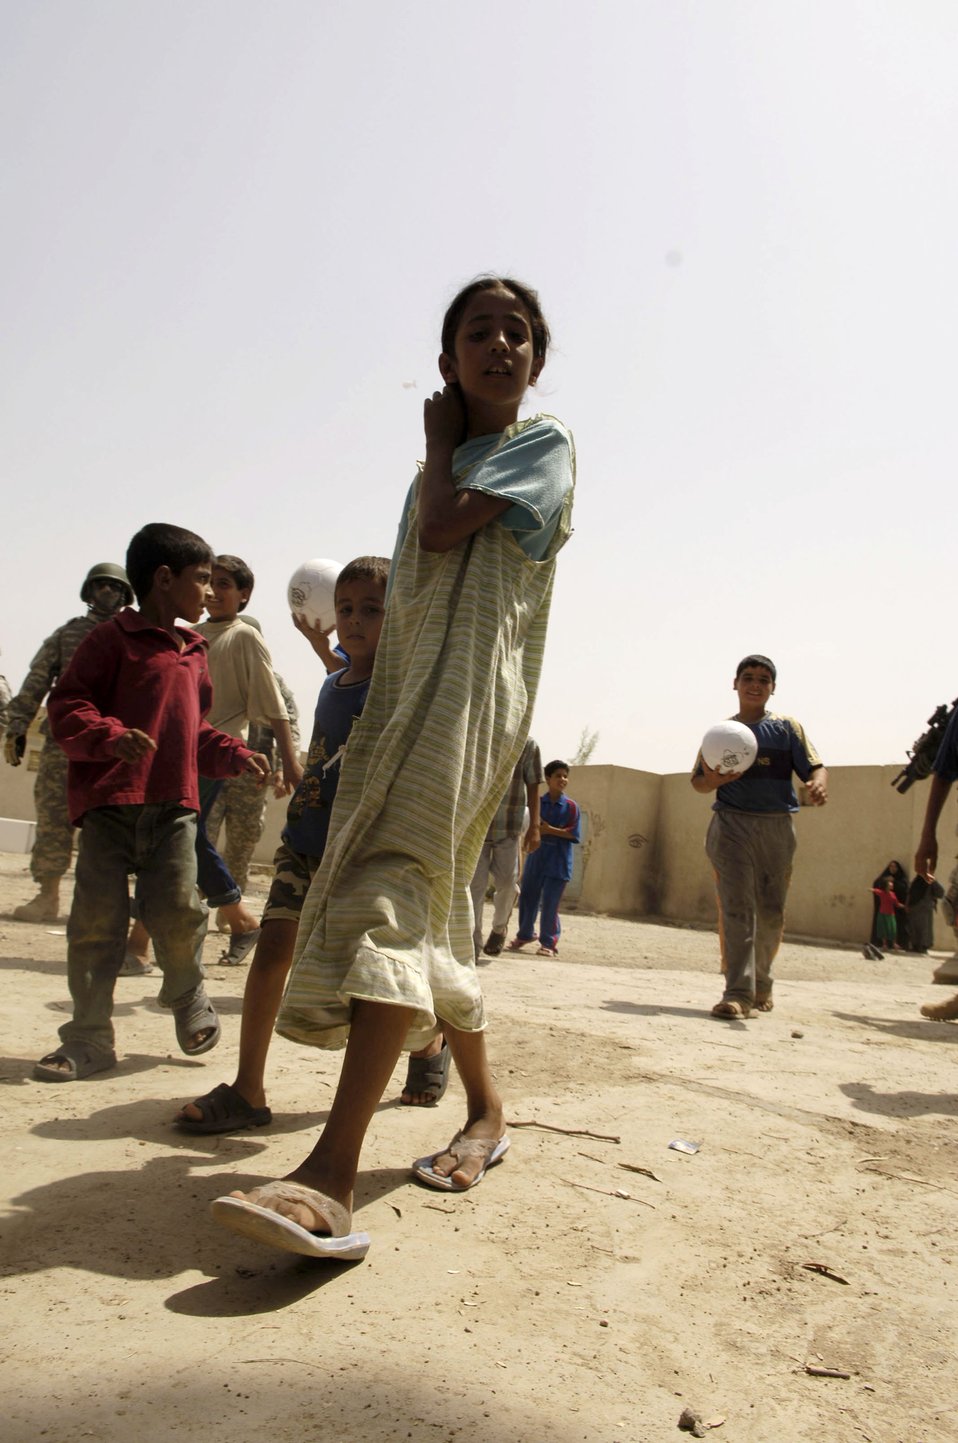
Gifts for the tender hearts

During a recent humanitarian mission May 24, U.S. servicemembers worked with the Iraqi National Police to distribute school supplies, toys and treats to children in Al Furat, Iraq.